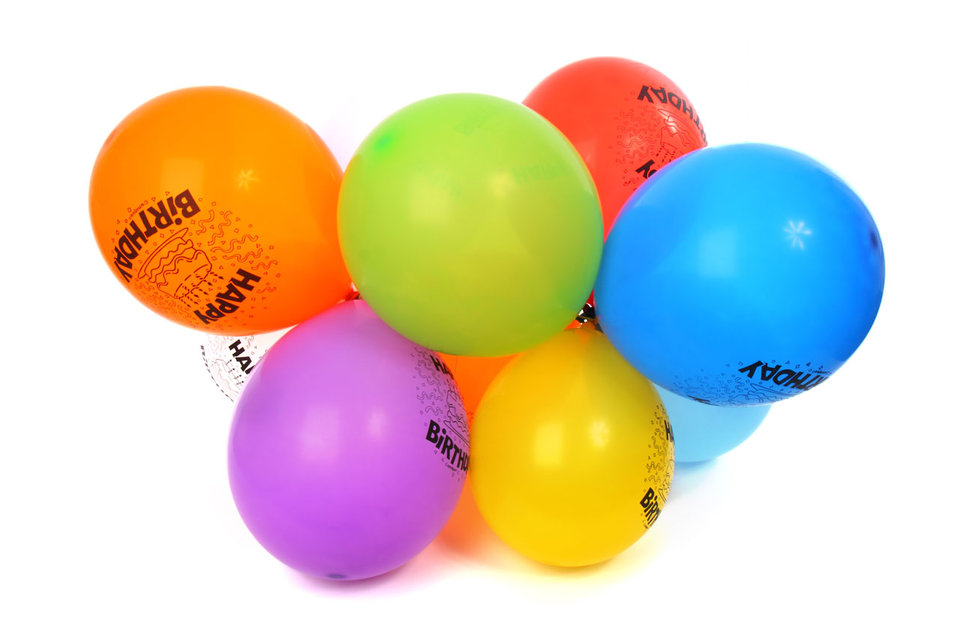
Happy birthday balloons isolated on white background.